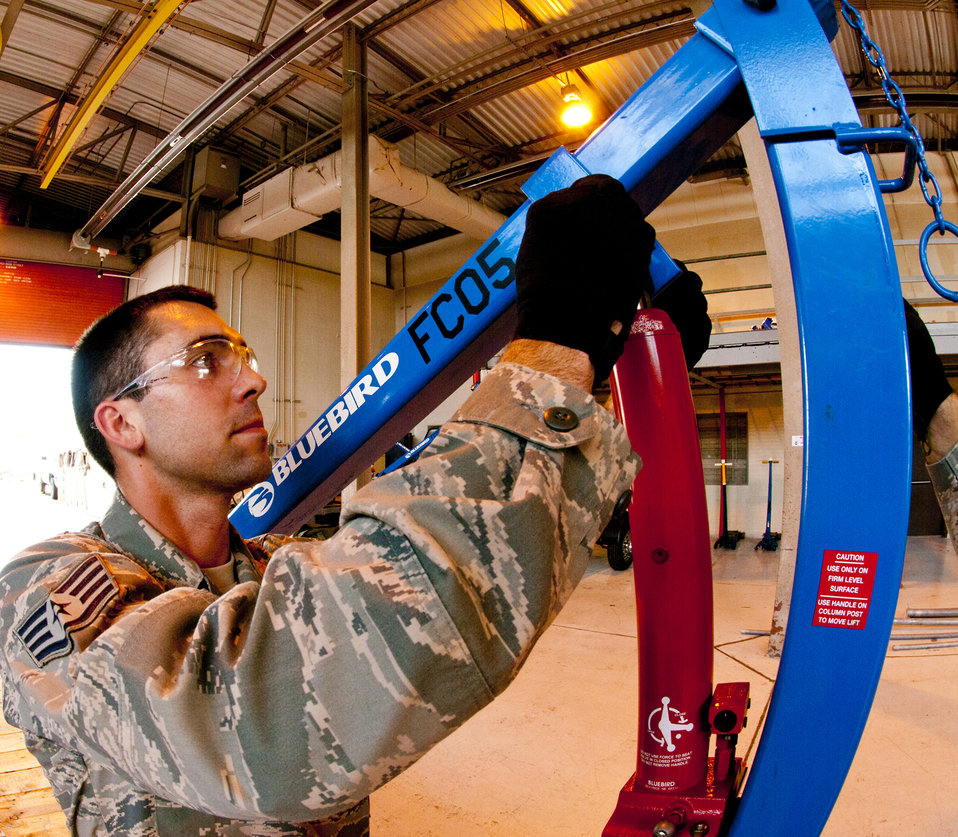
Lifesaving Airman

Staff Sgt. Mitch Corbin inspects aerospace grounds equipment at the 147th Reconnaissance Wing, Ellington Field Joint Reserve Base, Houston, Texas. Corbin was recognized for his lifesaving efforts when he pulled a Houston-area woman to safety following a fiery crash.